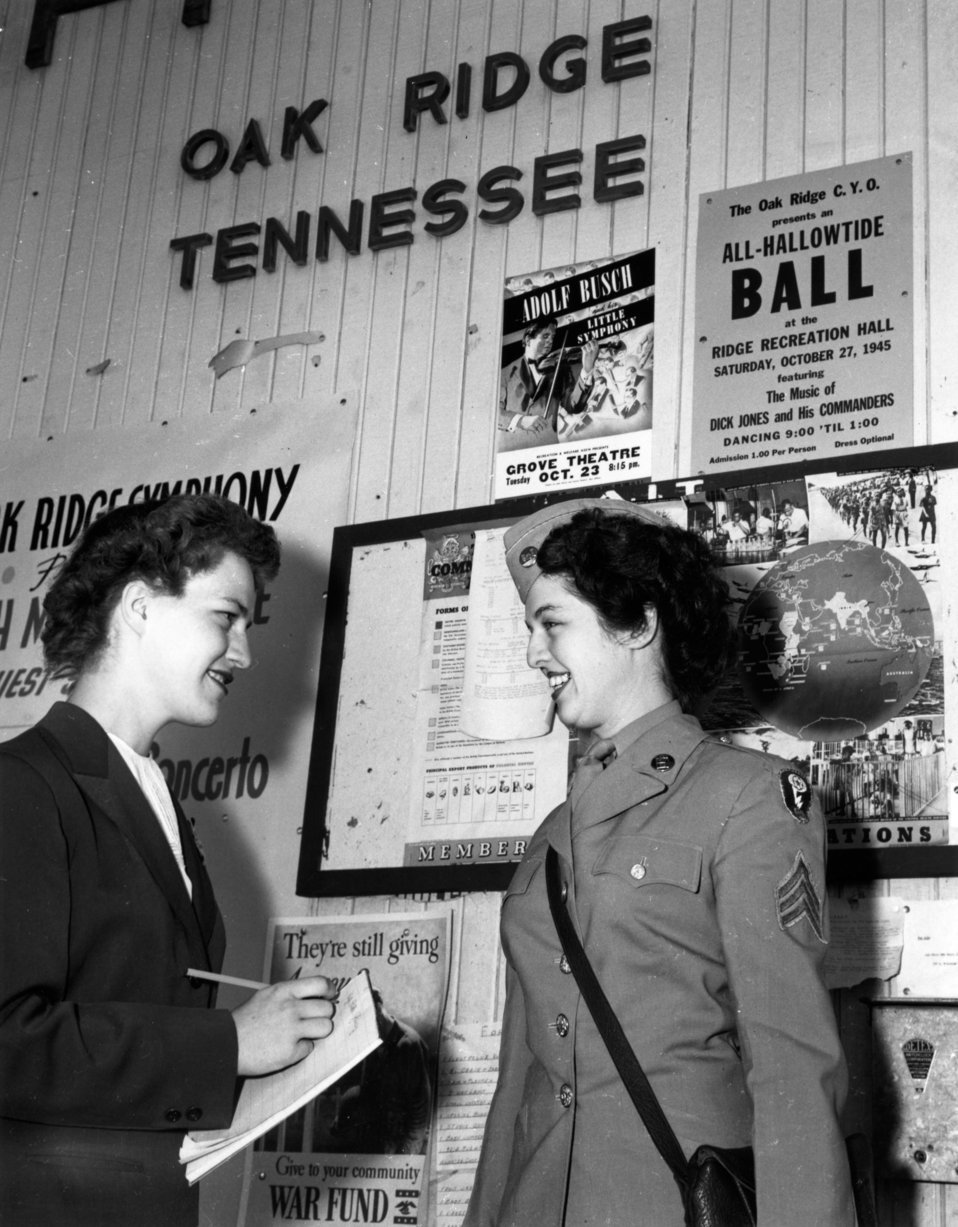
Army Activity at Oak Ridge